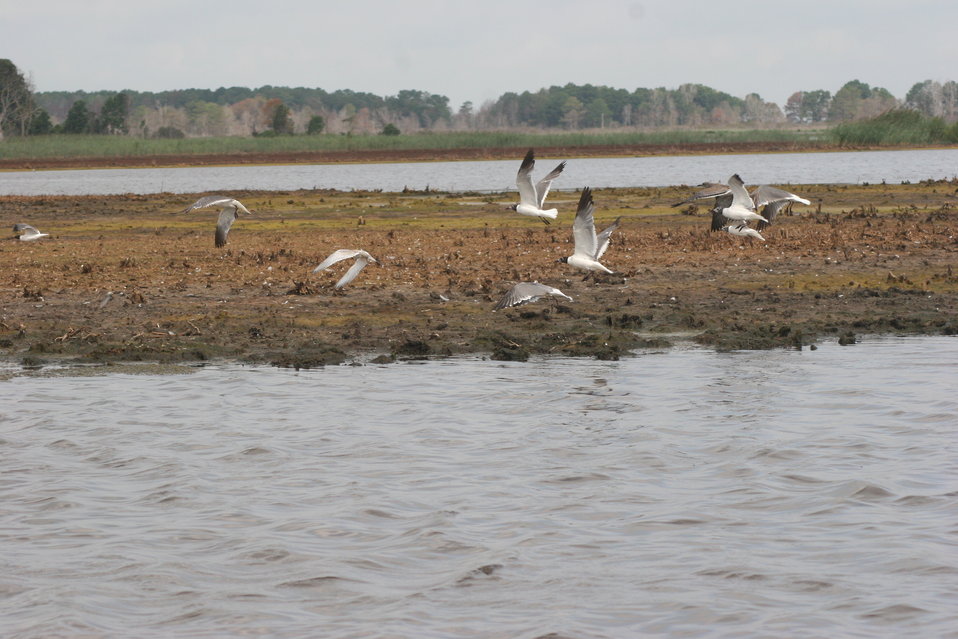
Laughing gulls at Prime Hook National Wildlife Refuge